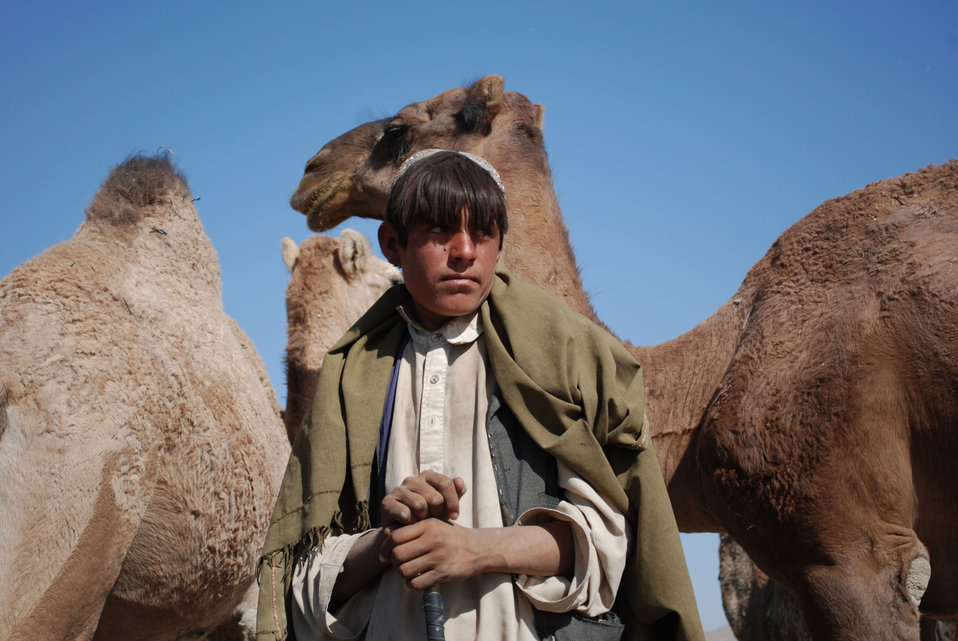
'On the Road' in Kandahar